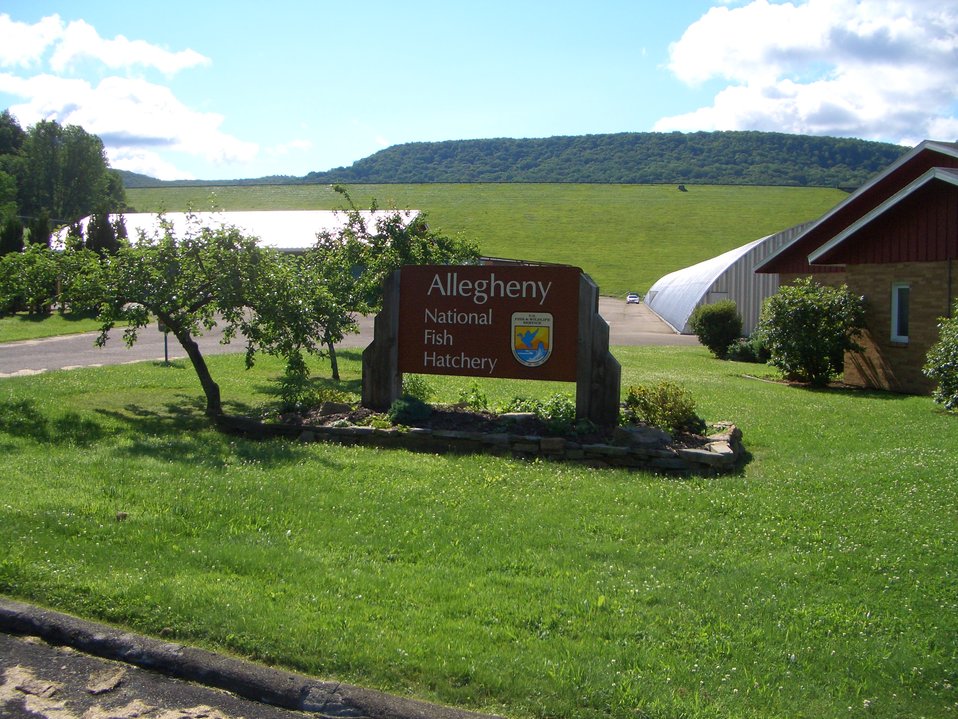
Allegheny National Fish Hatchery

From 1974 until 2005, the Allegheny National Fish Hatchery in Warren, Pennsylvania, produced as many as 1.3 million lake trout annually to help restore the populations in Lake Ontario and Lake Erie.